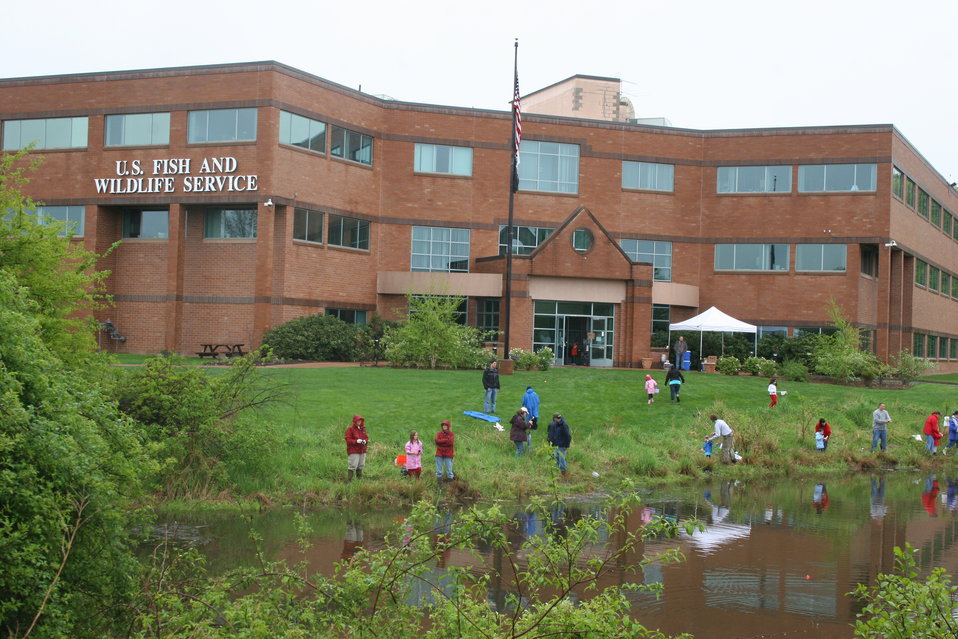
Fishing event at U.S. Fish and Wildlife Service Regional Office in Hadley, MA